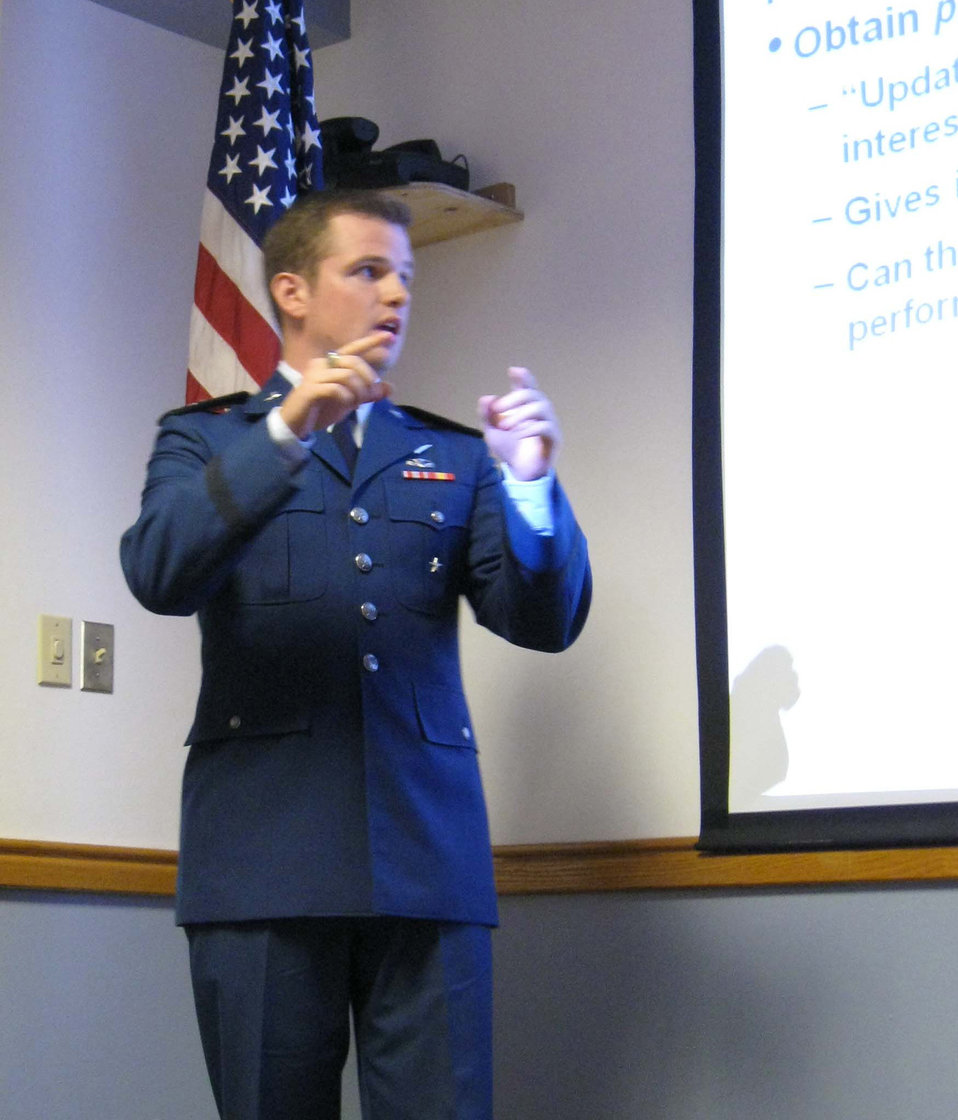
Cadets learn by doing during summer program at AFOTEC

Cadet Cary Reeves explains his work on Bayesian analytic methods to Air Force Operational Test and Evaluation Center personnel at Kirtland Air Force Base, N.M., at the end of the five-week U.S. Air Force Academy Cadet Summer Research Program. AFOTEC hosted the USAFA program for a second year at locations in California, Colorado, Florida, Nevada, and AFOTEC's headquarters at Kirtland.